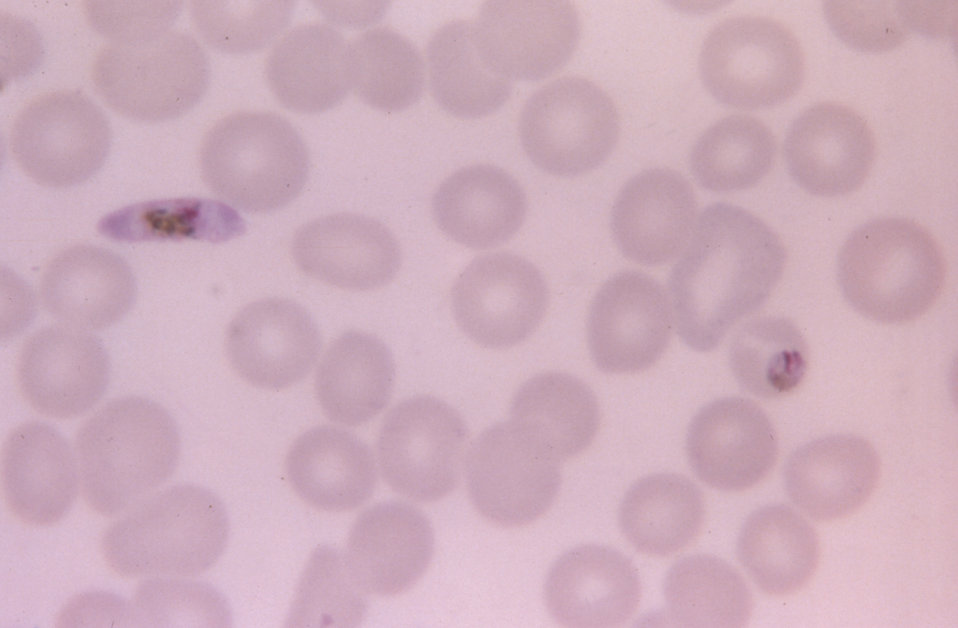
This micrograph shows a P. falciparum macrogametocyte (Lt), and a growing P. malariae trophozoite (Rt).